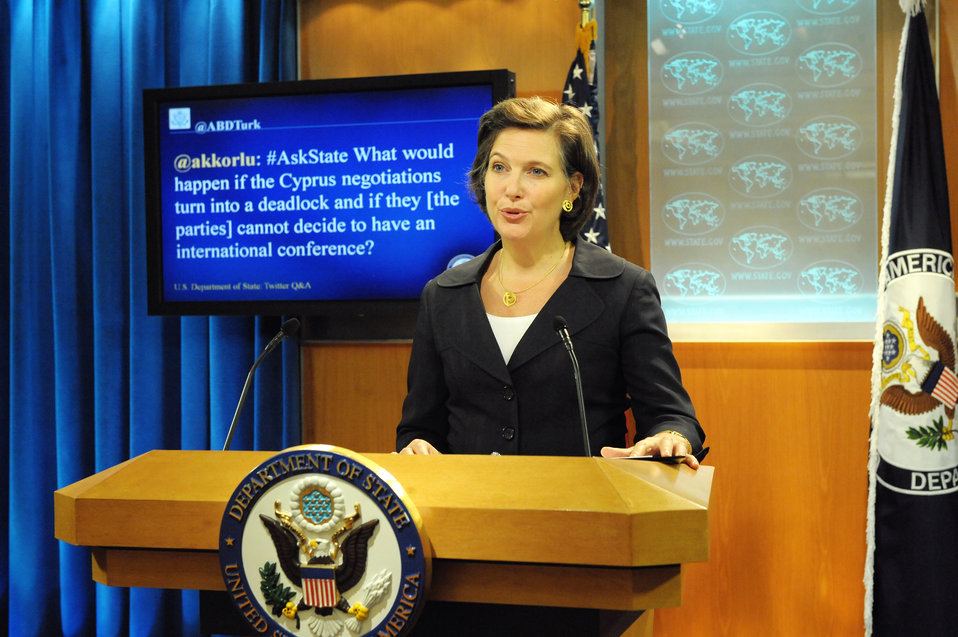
Spokesperson Nuland Responds to a Question from @ABDTurk

Victoria Nuland, Spokesperson for the U.S. Department of State, answers a question selected from the Department’s official Turkish Twitter feed, @ABDTurk, on January 27, 2012.